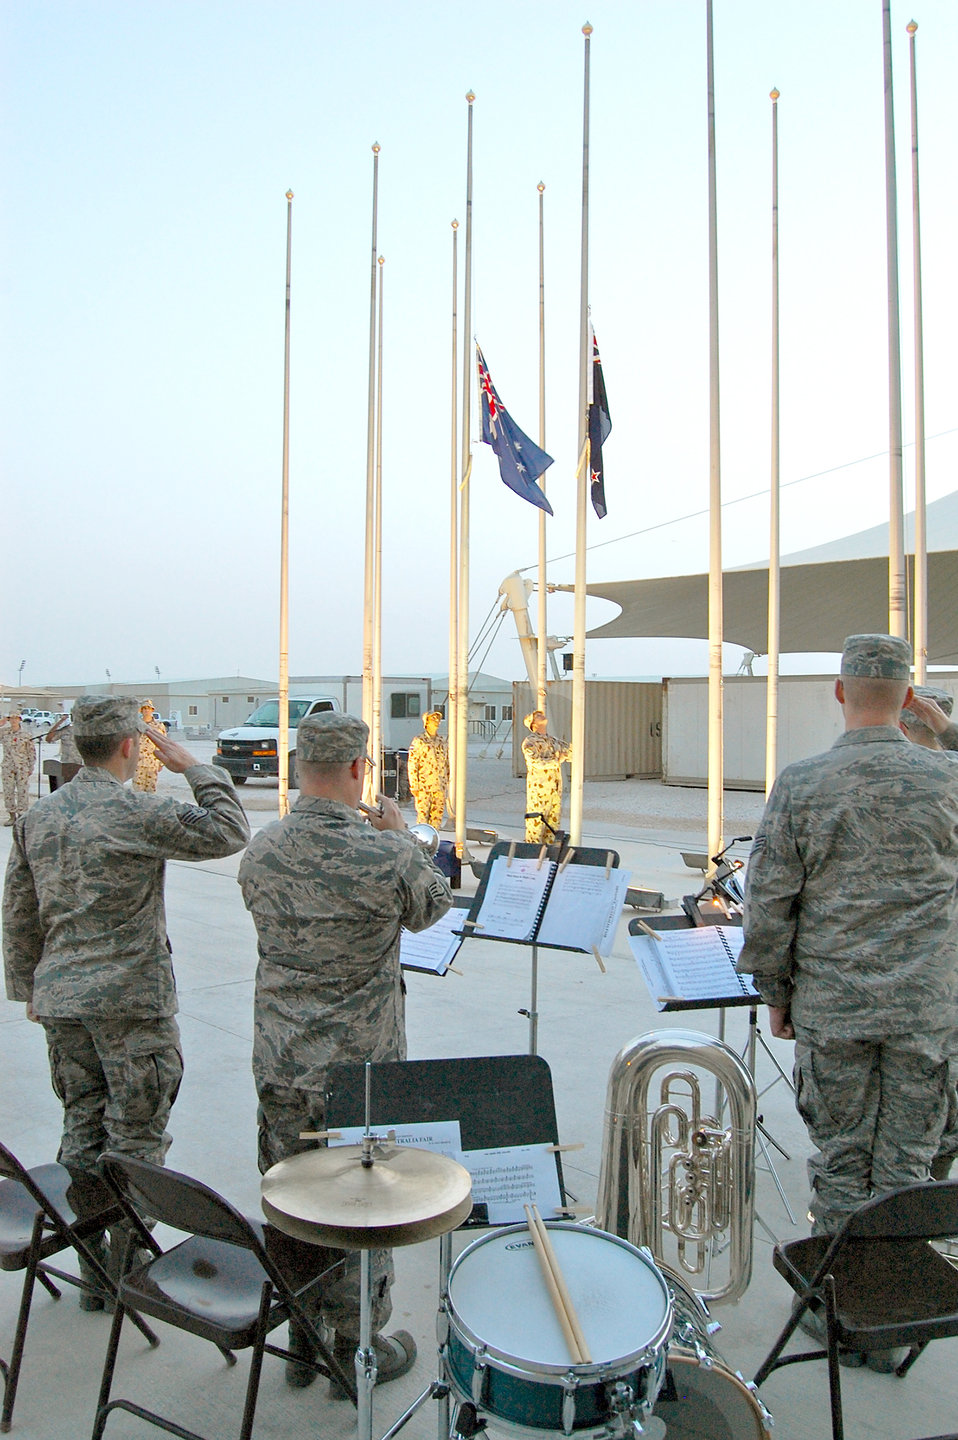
Coalition airmen observe day of remembrance

Staff Sgt. Mark Nixon sounds